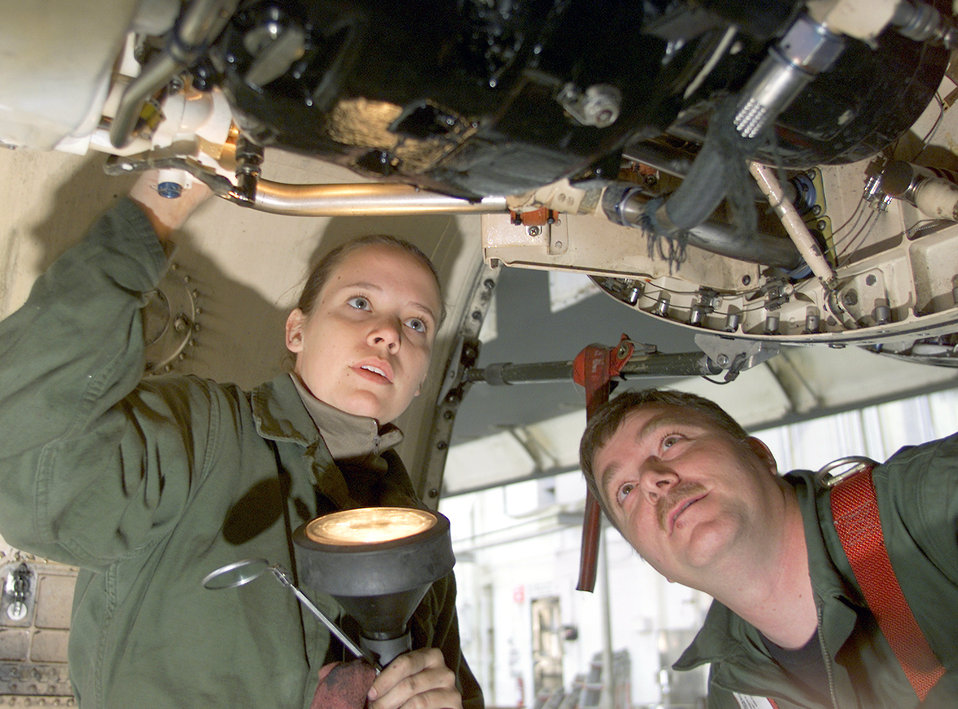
Record year

DYESS AIR FORCE BASE, Texas (AFPN) -- Airman 1st Class Lacy Foss and Tech. Sgt. Robert Hawkins perform a visual inspection of a B-1 Lancer accessory drive gear box. Maintainers and logistical support workers at the 7th Bomb Wing here have exceeded Air Combat Command's mission capable rates for an entire year -- a first for any B-1 unit.